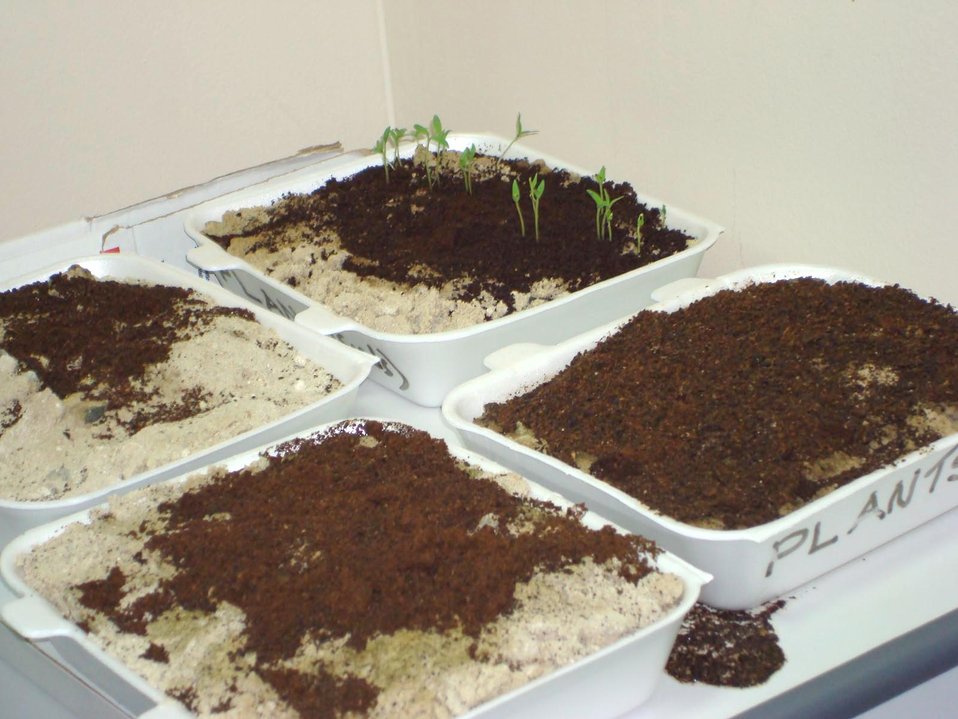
386th EMDG Airmen boast garden oasis

Seeds collected from the fruits and vegetables served at the dining facility were planted in Styrofoam containers with spent coffee grounds as compost and kept inside away from the desert summer sun while they took root.